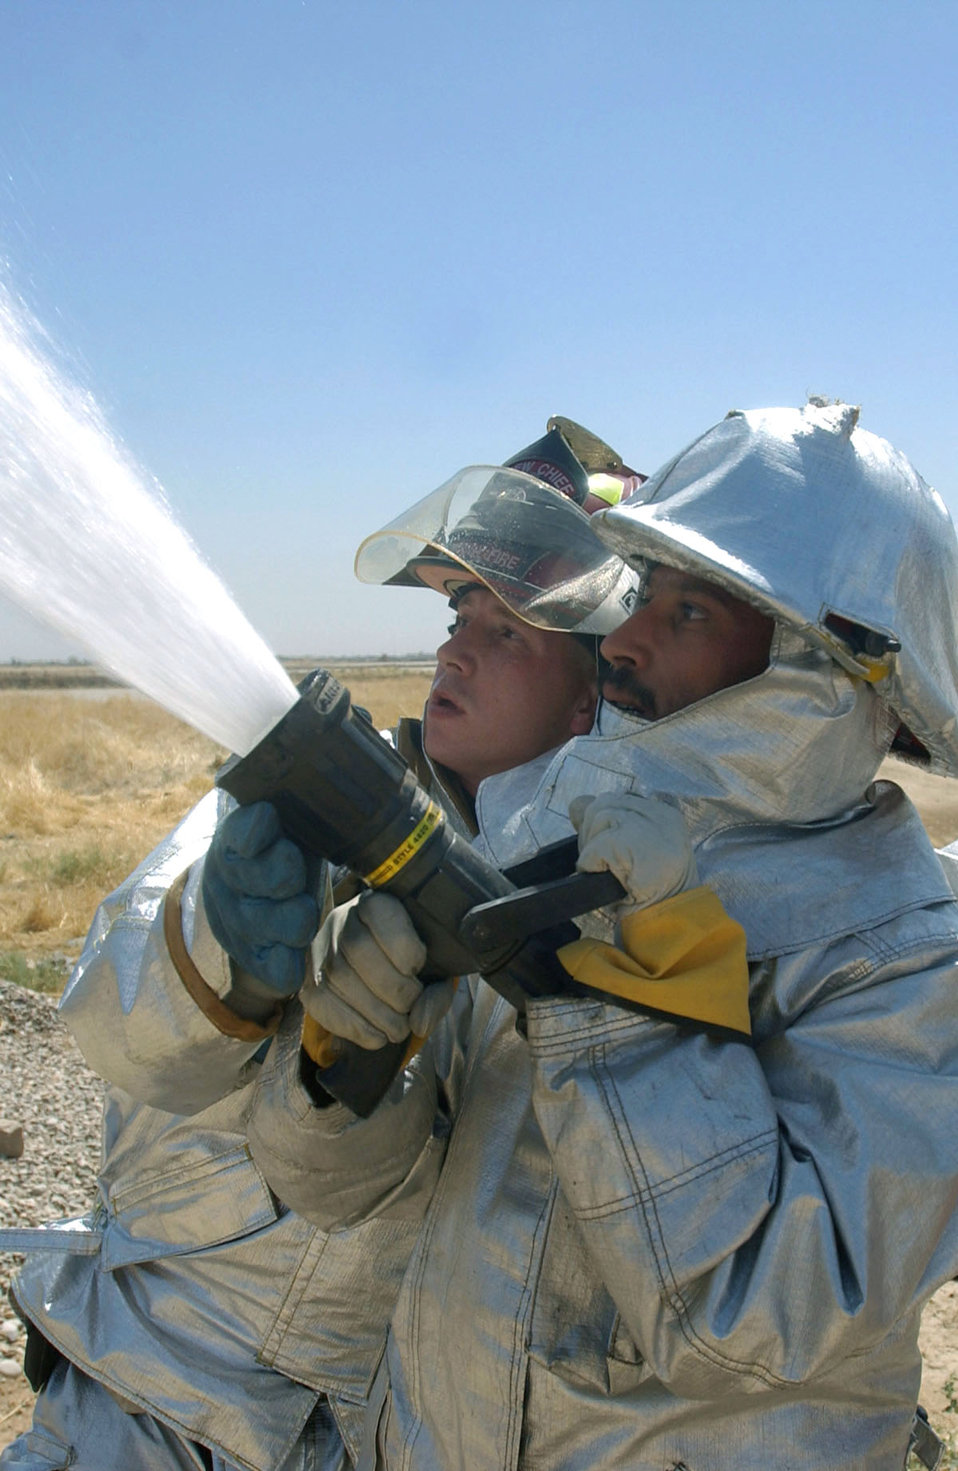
Kirkuk firefighters train Iraqi guards

KIRKUK AIR BASE, Iraq -- Staff Sgt. Shannon Anderson helps an Iraqi firefighter aim a fire hose during a joint training session here. Sergeant Anderson is assigned to the 506th Expeditionary Civil Engineer Squadron's fire department and is from Moody Air Force Base, Ga.